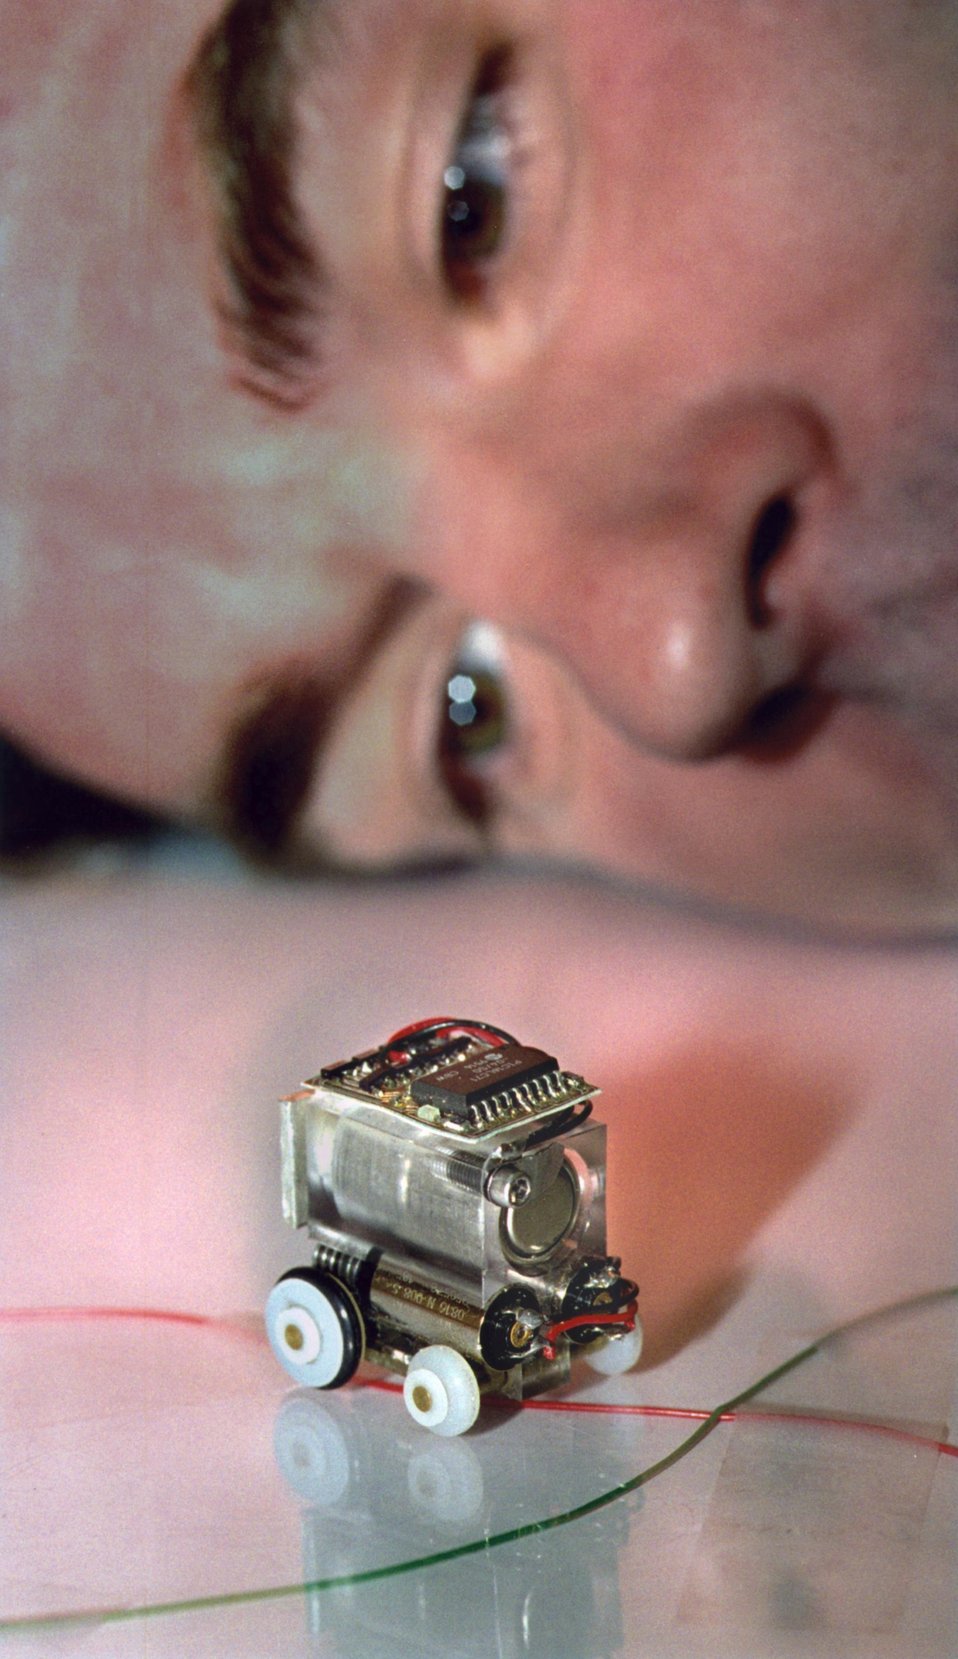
SANDIA'S MOBILE AUTONOMOUS WHEELED VEHICLE (MARV).
SANDIA'S LARGE ROBOTICS RESEARCH PROGRAM IS DEVELOPING ROBOTS FOR TASKS SUCH AS CLEANING TOXIC WASTE, DISMANTLING NUCLEAR BOMBS AND PERFORMING MICROSURGERY. MARV IS A PROTOTYPE MINI ROBOT, DEVLEOPED TO HELP SCIENTISTS WITH THE PROBLEMS OF BUILDING TINY AUTONOMOUS ROBOTS. RESEARCHERS HOPE MARV WILL LEAD TO THE DEVELOPMENT OF MACHINES THAN CAN DESTROY LAND MINES AND/OR WARN OF A CHEMICAL ATTACK.